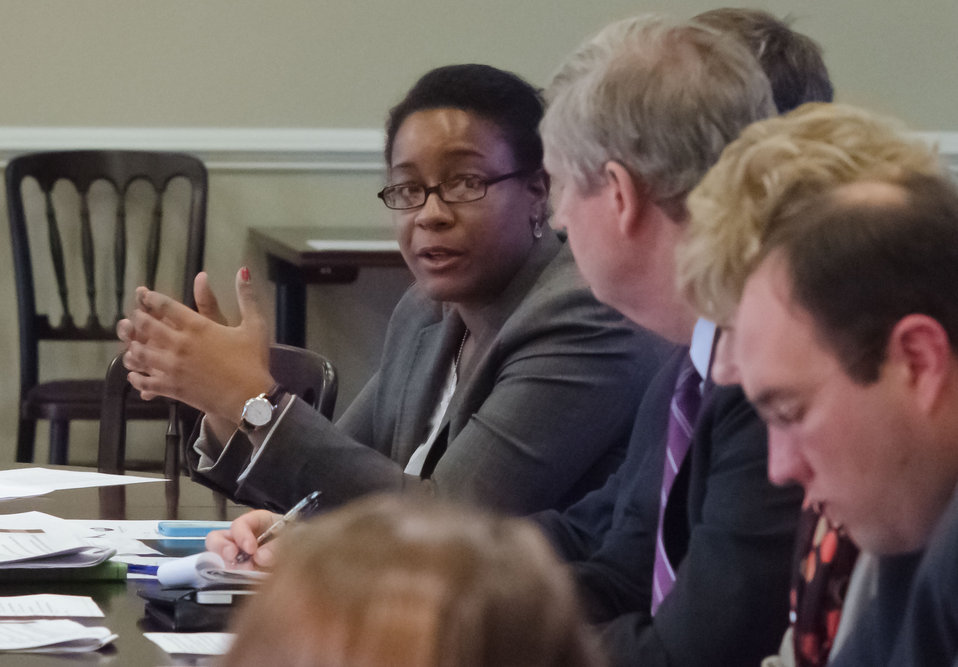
White House Deputy Assistant to the President for Economic Policy Danielle Gray speaks during the White House Rural Council chaired by Agriculture Secretary Tom Vilsack at the White House in Washington, D.C. on Friday, Oct. 5, 2012. The White House Rural Council discusses recent White House announcements and Secretary Vilsack asked council members to outline their work plan for the coming months.